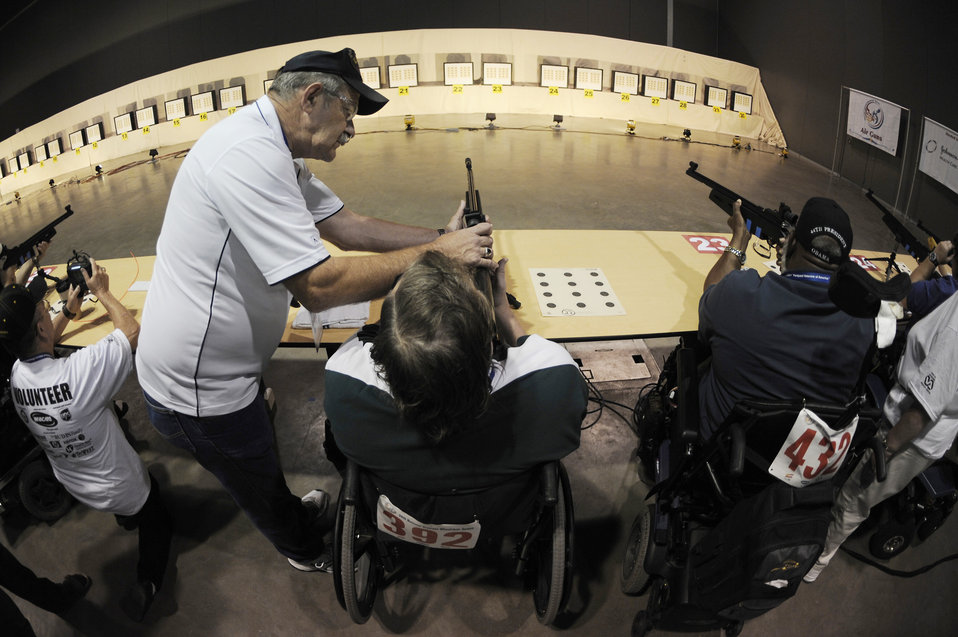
Wheelchair athletes participate in national veteran's competition

William Ethridge gets assistance from a volunteer as he competes in the air gun competition during the 29th National Veterans Wheelchair Games July 14 in Spokane, Wash. Mr. Ethridge is an Air Force veteran and resides in Spokane. The 29th National Veterans Wheelchair Games runs through July 19.